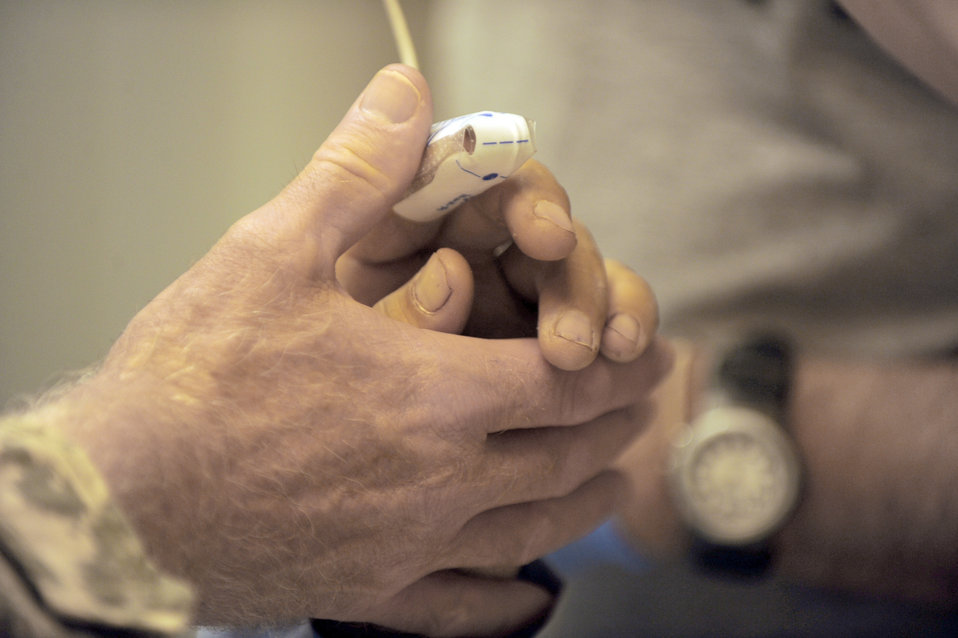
Joint hospital staff cares for warfighters, Afghans

Army Lt. Col. (Dr.) Bob Kieffer checks the vitals of an Afghan man May 12, 2010, at Forward Operating Base Salerno, Afghanistan. Doctor Kieffer is a vascular surgeon assigned to the 452nd Combat Support Hospital.